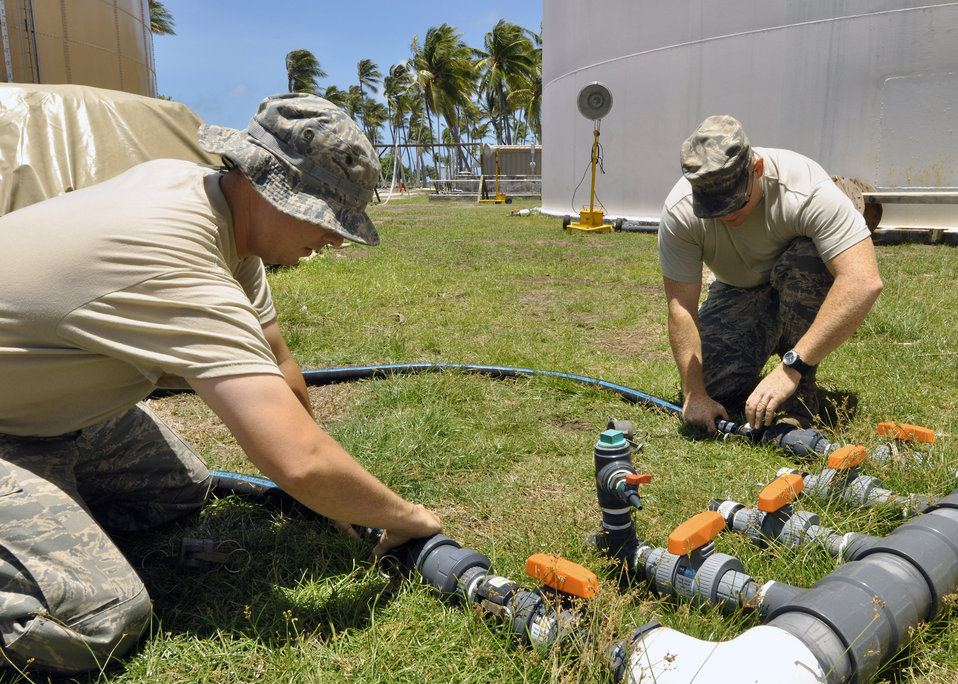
Airmen provide island residents with drinkable water

Civil engineer Airmen work to connect tubes to water tanks April 18 to replenish the water supply here that was ruined by unusually high tides in the early part of February at Roi-Namur in the Marshall Islands. The Airmen have treated more than 1,840,000 gallons of water since their arrival.